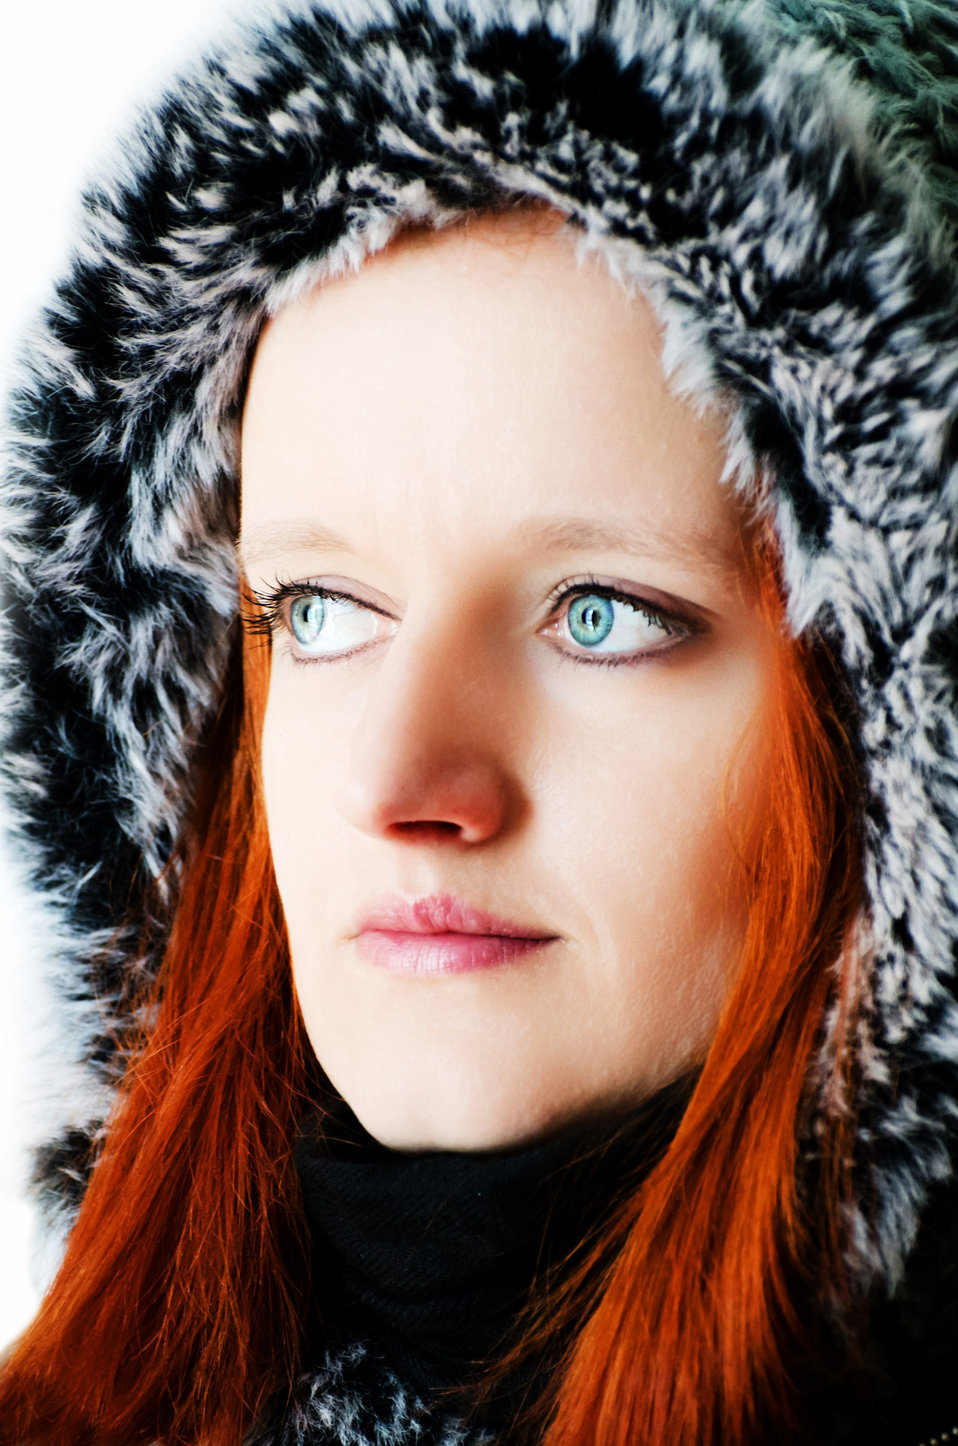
Woman - fashion.